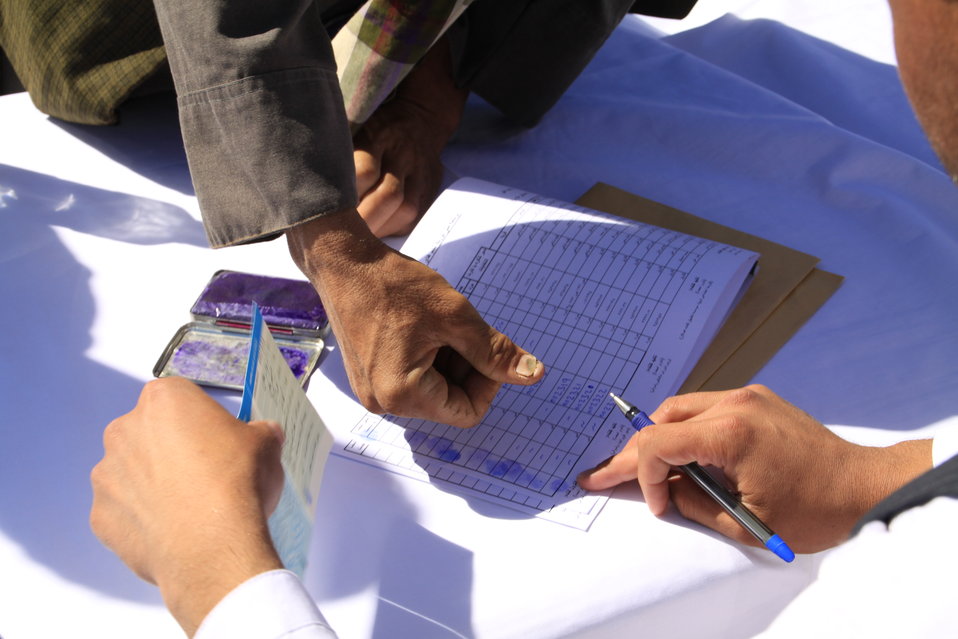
AVIPA Plus Wheat Seed Distribution 101005

US Ambassador Karl Eikenberry and USAID Acting Mission Director Kevin Brownawell joined the Minister of Agriculture, Irrigation and Livestock, H.E. Minister Mohammed Rahimi in signing a Memorandum of Understanding and distributing vouchers to area farmers for wheat and fertilizer.

US Ambassador Karl Eikenberry and USAID Acting Mission Director Kevin Brownawell joined the Minister of Agriculture, Irrigation and Livestock, H.E. Minister Mohammed Rahimi in signing a Memorandum of Understanding and distributing vouchers to area farmers for wheat and fertilizer.

US Ambassador Karl Eikenberry and USAID Acting Mission Director Kevin Brownawell joined the Minister of Agriculture, Irrigation and Livestock, H.E. Minister Mohammed Rahimi in signing a Memorandum of Understanding and distributing vouchers to area farmers for wheat and fertilizer.